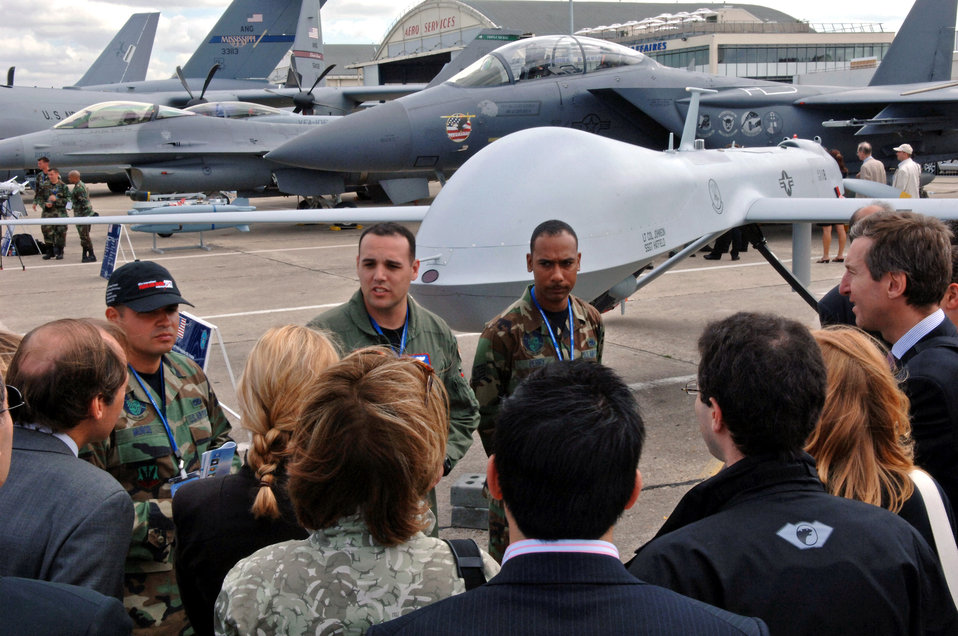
Predator draws attention at Paris Air Show

Staff Sgt. Angelo Munoz (from left), Capt. Chad Miner and Staff Sgt. Patrick Perry answer various questions about the MQ-1 Predator June 20 at the 47th International Paris Air Show at Le Bourget Airport, France. The Predator is one of seven Department of Defense aircraft on display this year.